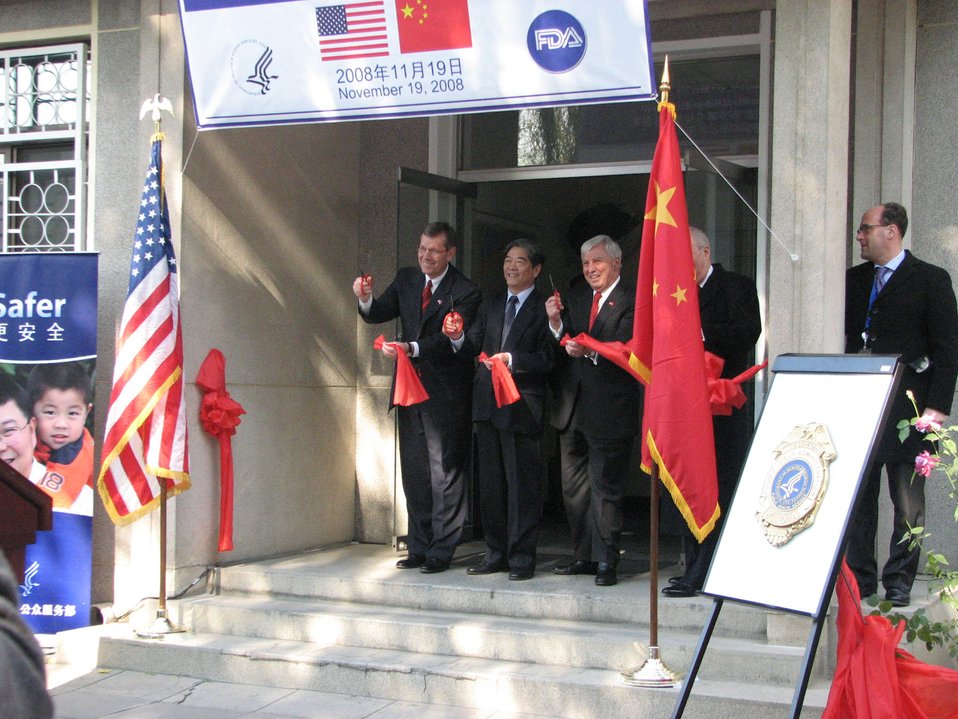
FDA’s China Offices Focus on Product Safety

In November 2008, U.S. and Chinese officials celebrated the opening in Bejing of the first of FDA’s three offices in China. Since then, offices have been opened in Shanghai and Guangzhou. Read this FDA Consumer Update: www.fda.gov/ForConsumers/ConsumerUpdates/ucm284461.htm

Consumer Updates are a quick and easy way to pick up important health information for you and your family. For a complete list of Consumer Updates see the Consumer Updates photo set: www.flickr.com/photos/fdaphotos/sets/72157624900896241/.

For the latest Consumer Updates go to: www.fda.gov/forconsumers/consumerupdates